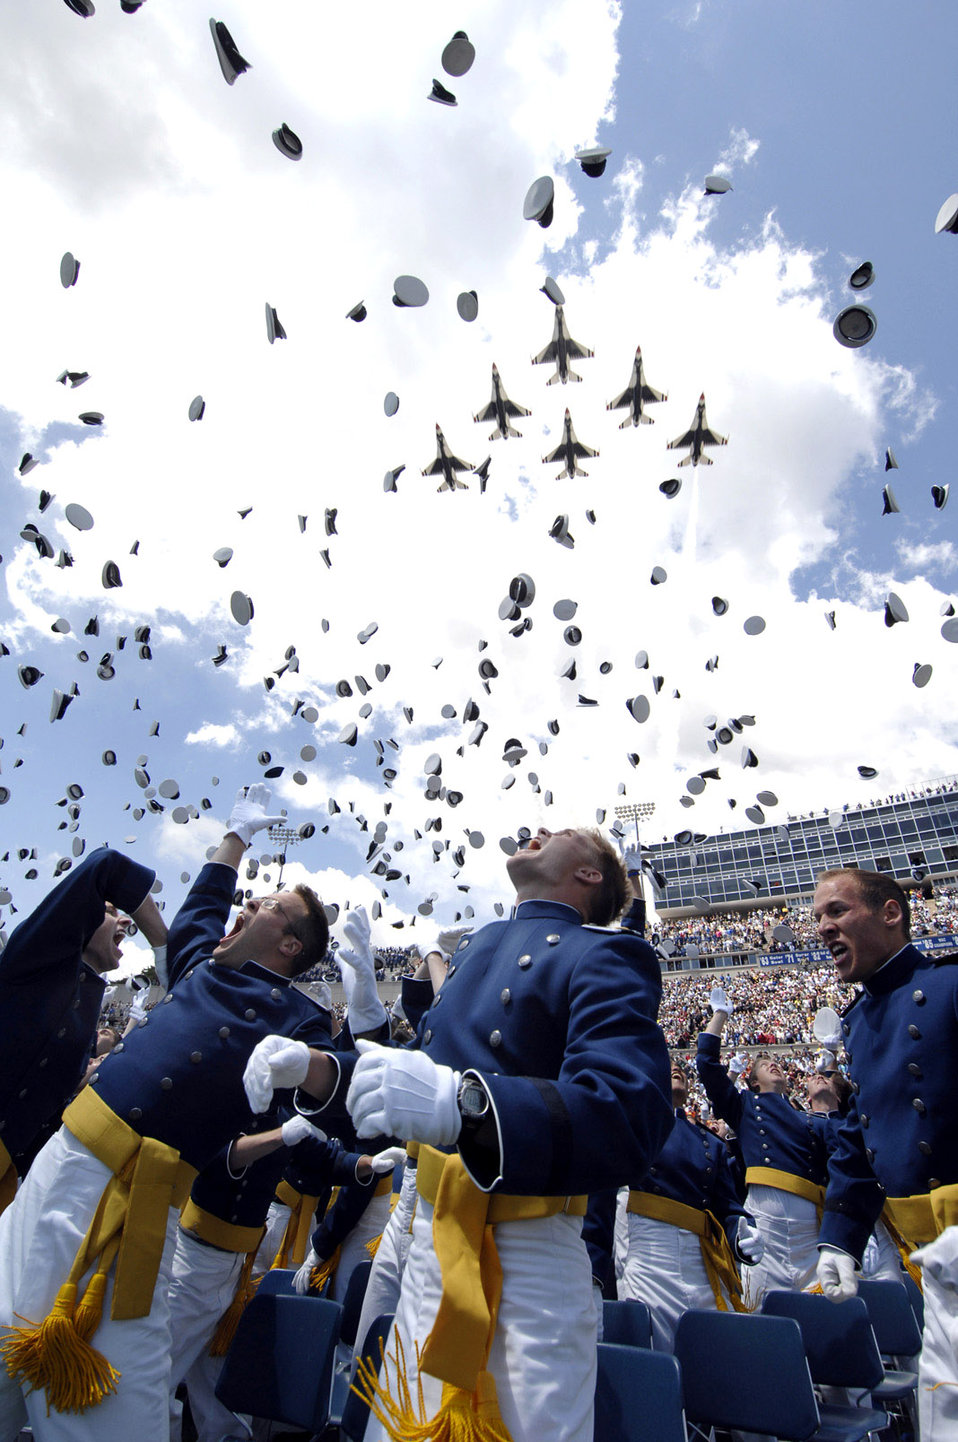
'Stay true' SECDEF tells Air Force Academy grads

The U.S. Air Force Thunderbirds fly over the 2007 U.S. Air Force Academy graduation ceremony May 30 in Colorado Springs, Colo.